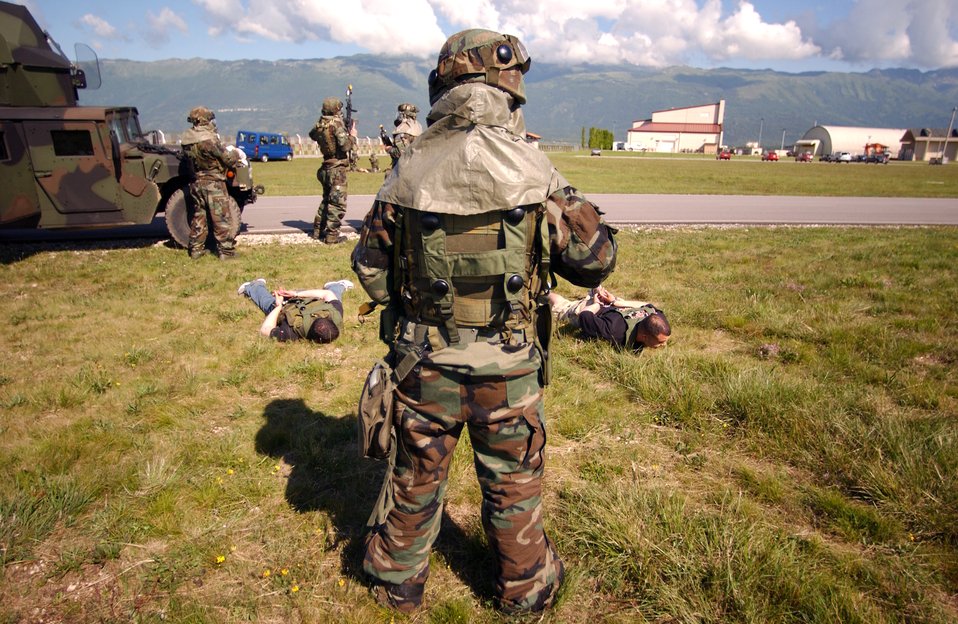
Airmen defend base during exercise

An Airman from the 31st Security Forces Squadron stands guard over